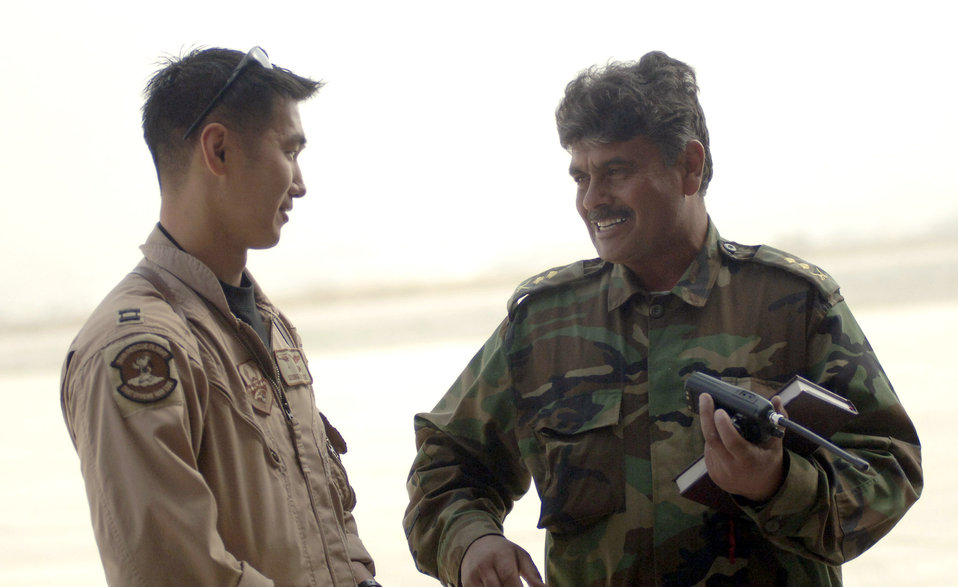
U.S. forces mentor Afghan Air Corps to 'stand on own'

Capt. Seung Hak Lee discusses maintenance issues with Lt. Col. Abdull Shafi Noory April 9 on the Kabul International Airport flightline. Captain Lee is a rotary wing Air Force mentor assigned to Defense Reform Directorate Air Division under Combined Security Transition Command -Afghanistan. Colonel Noory is the deputy commander for Maintenance Operations Group for ANAC.